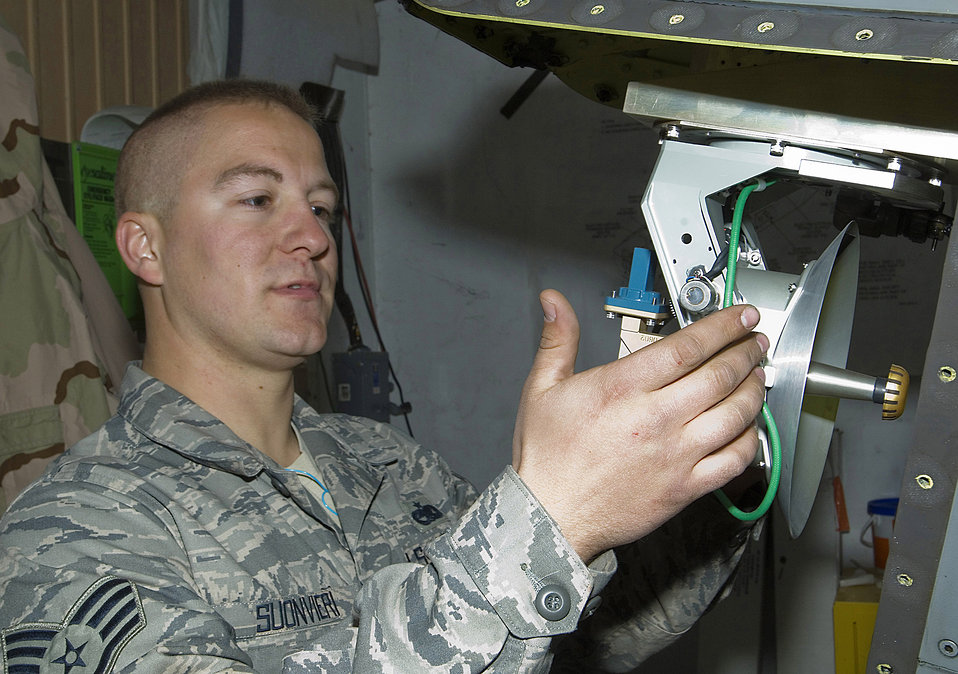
TARS pod brings picture into focus

Staff Sgt. George Suonvieri checks the connections on a Theater Airborne Reconnaissance System pod mounted on an F-16 Fighting Falcon Dec. 21 at Joint Base Balad, Iraq. Ground commanders use TARS imagery to achieve their tactical objectives. Sergeant Suonvieri is one of four 332nd Expeditionary Aircraft Maintenance Squadron avionics maintainers responsible for the 332nd Expeditionary Fighter Squadron's TARS pods. Sergeant Suonvieri, a native of Duluth, Minn., is deployed from the Minnesota Air National Guard's 148th Fighter Wing.